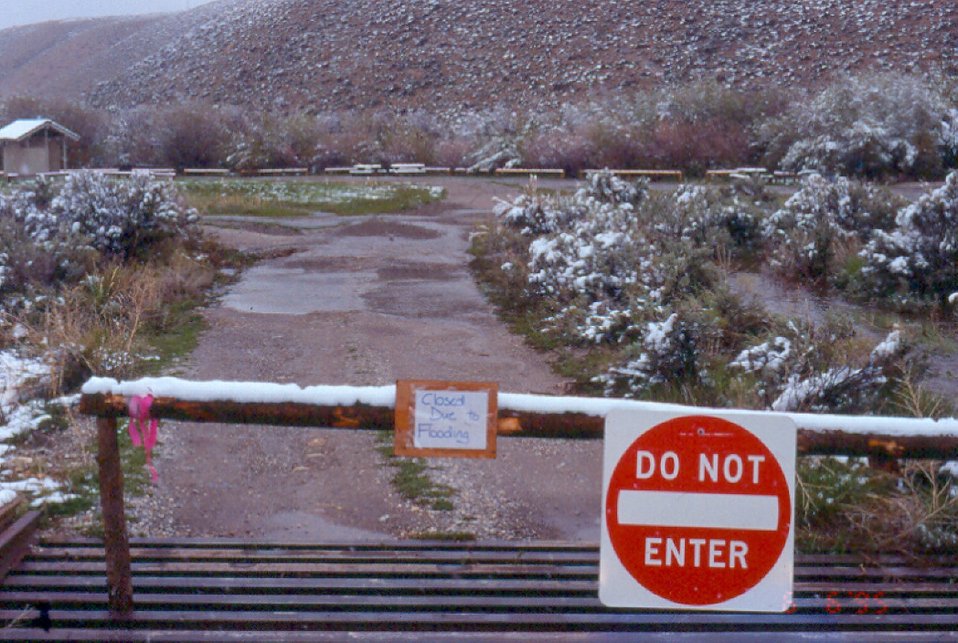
Recreation Site Flooding Sign Salmon Field Office UCSC Upper Columbia Salmon Clearwater District